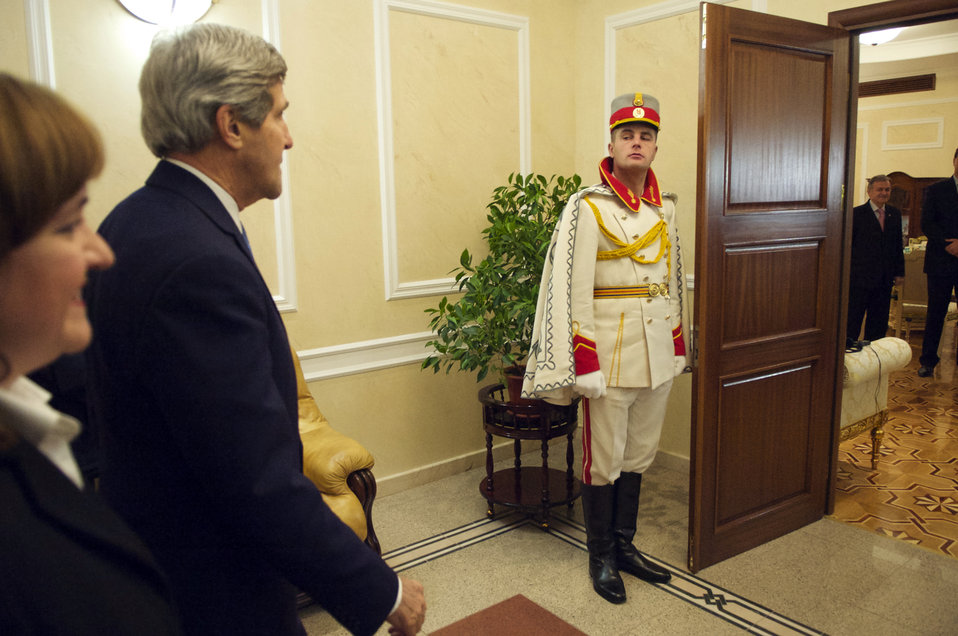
A Member of a Moldovan Honor Guard Welcomes Secretary Kerry to the Moldovan Presidential Residence

A member of a Moldovan honor guard welcomes U.S. Secretary of State John Kerry as he arrives at the Presidential Residence for meetings with top officials in Chisinau, Moldova, on December 4, 2013.